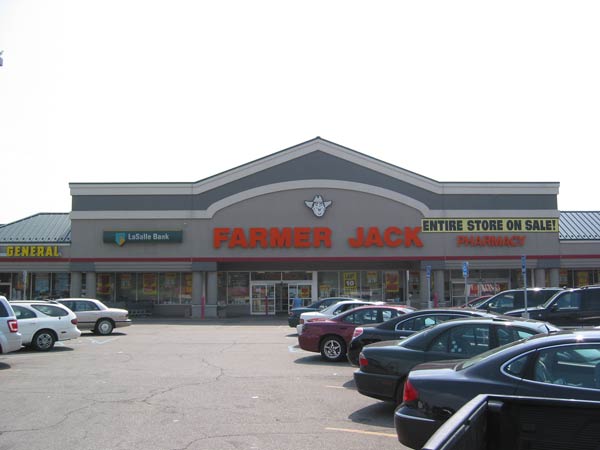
Farmer Jack